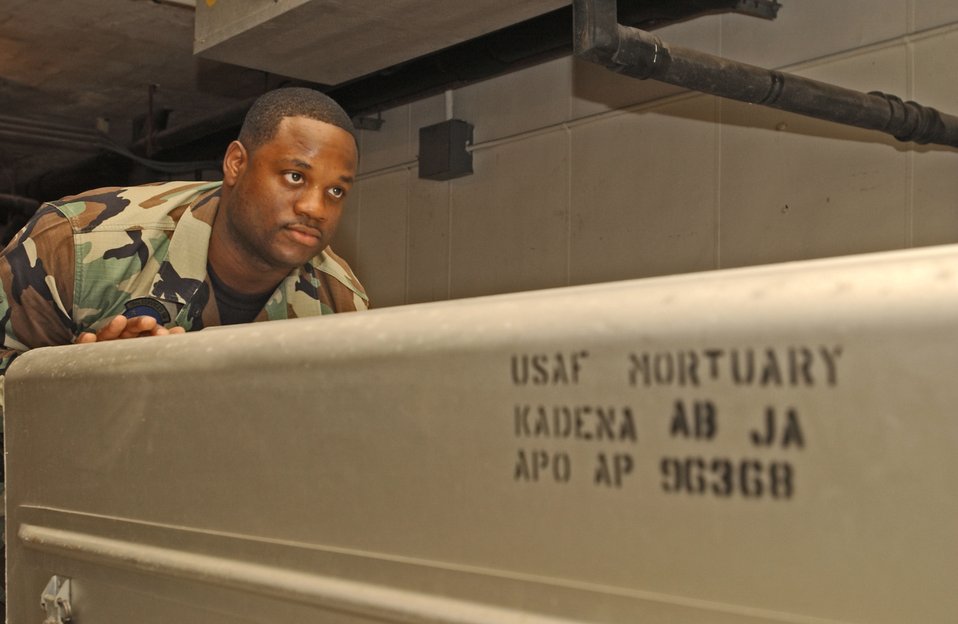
Preparing for transfer

KADENA AIR BASE, Japan -- Tech. Sgt. Gary Suvill stores a transfer case in the services warehouse here Jan. 11. The 18th Services Squadron has provided more than 120 transfer cases for transportation of bodies in support of Operation Unified Assistance. The Airman is assigned to the 18th Services Squadron.